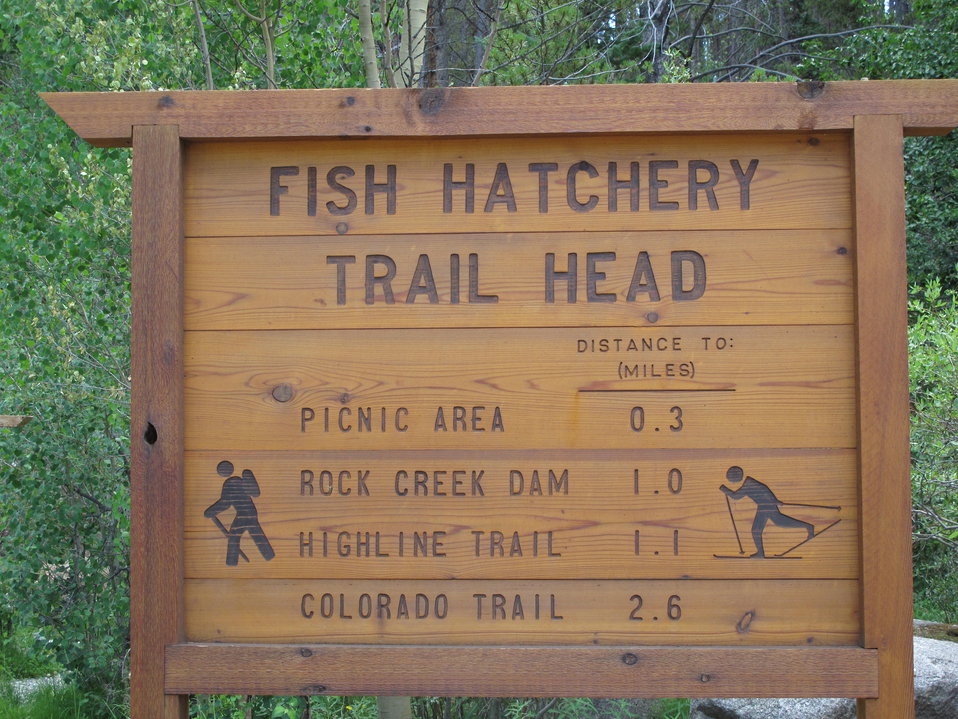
Trail Head

Beyond hiking, you can also ski, snow shoe and picnic on the Leadville National Fish Hatchery grounds